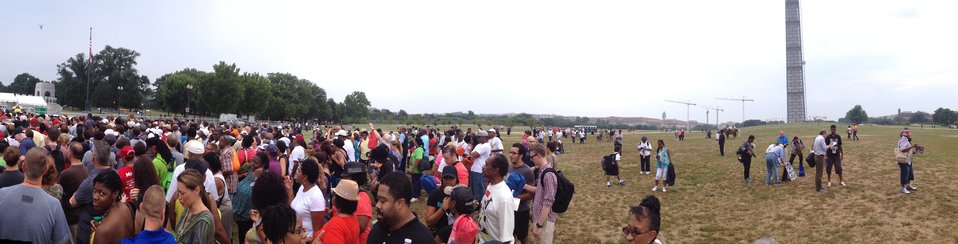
Marchers gather at the edge of the Washington Memorial grounds to process through the security entrance at the World War II Memorial, and on to the Reflecting Pool, and the Lincoln Memorial for the March on Washington, D.C., on Wed., Aug. 28, 2013.